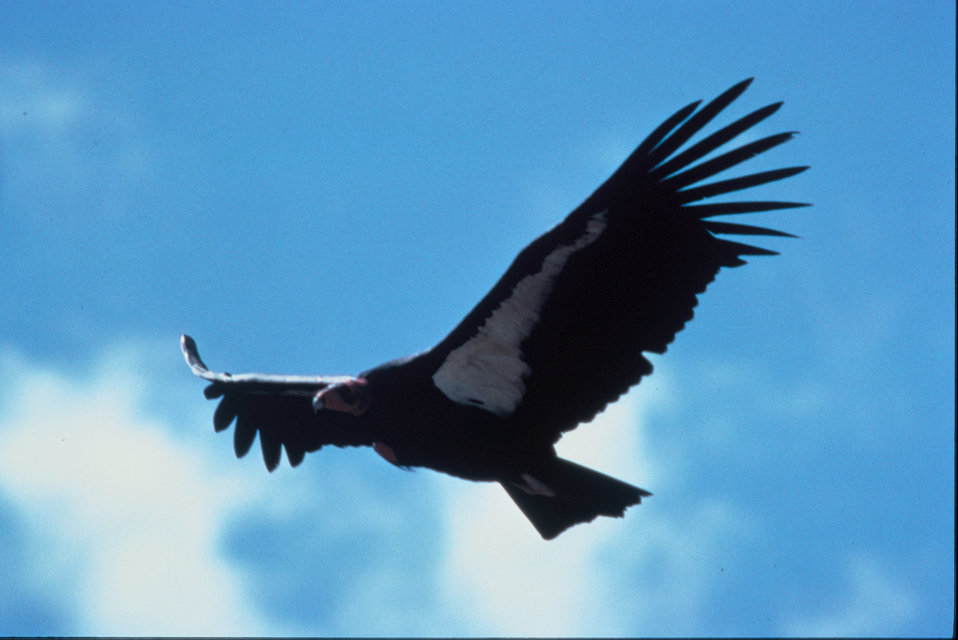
An adult condor in flight

An adult condor soars in flight.